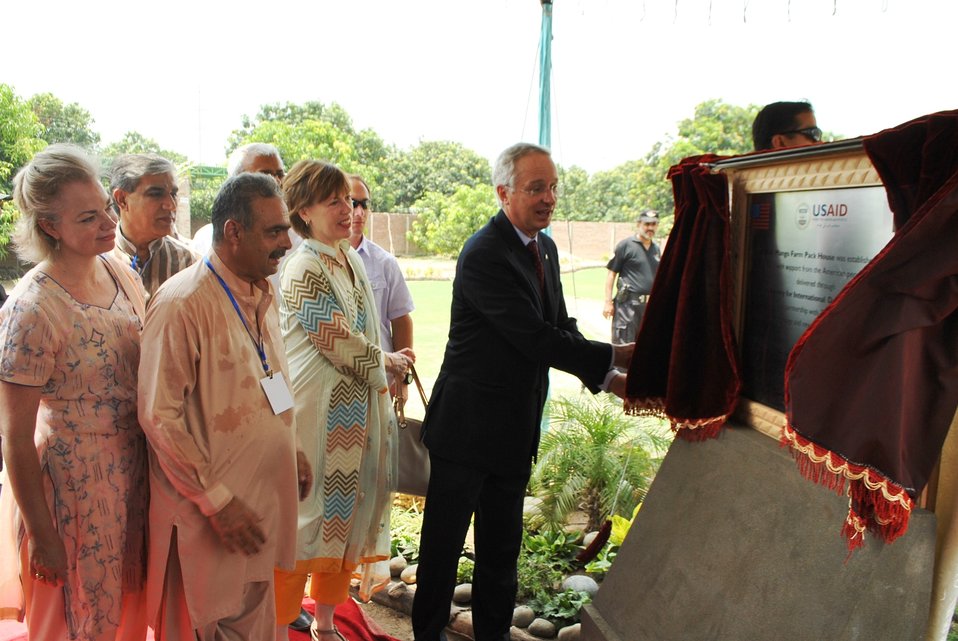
U.S. Helps Pakistani Farmers Export Mangos

Multan, July 24, 2011 - U.S. Ambassador Cameron Munter inaugurated a new U.S.-funded mango processing line at Lutfabad Farm. As a result of U.S-provided infrastructure upgrades, 13 farms in Southern Punjab will be able to export delicious Pakistani mangos to foreign markets. The U.S. partnership with mango producers is expected to yield a 30 million dollar increase in mango export revenue in the next two years, three million dollars of new investment, and 6,000 new jobs in Punjab and Sindh.